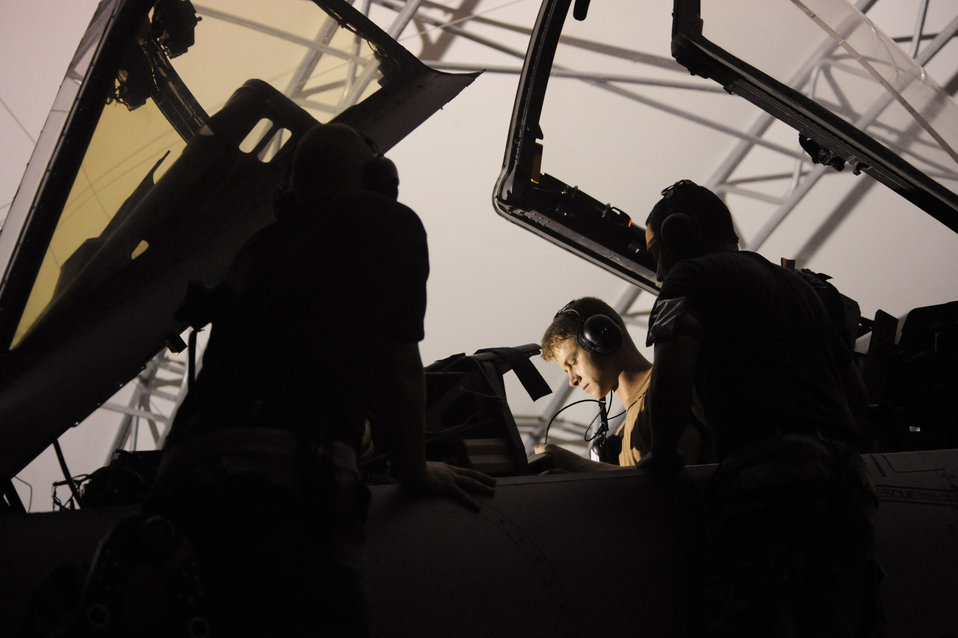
Paperless tech orders

From left, Senior Airman Ryan Ball, Airman 1st Class Cody Caldwell and Senior Airman Fernando Solis look over an electronic technical order July 25 before performing maintenance on an aircraft at Moody Air Force Base, Ga.